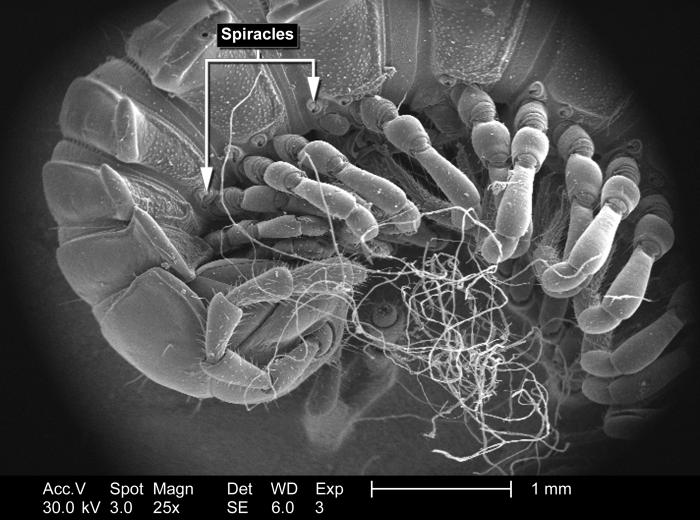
Magnified only 25x, this scanning electron micrograph (SEM) depicted the morphologic characteristics associated with an unidentified millipede's segmented body wall, at which point its jointed legs attached to the insect's exoskeleton. Millipedes are members of the insect Phylum Arthropoda, and the Class Diplopoda.Though the name 'millipede' means '1000 legs', these insects possess far fewer legs, which number more in the realm of 100 to 300, or 50 to 150 pairs. The reason there are two pairs of legs per segment is due to the fact that each uniquely morphologic segment is actually comprised of two fused segments, and are termed 'diplosegments'. The first 3 body segments actually comprise the thorax, whereupon, the first segment possesses no legs, and the 2nd and 3rd segments only possess 1 pair of legs.